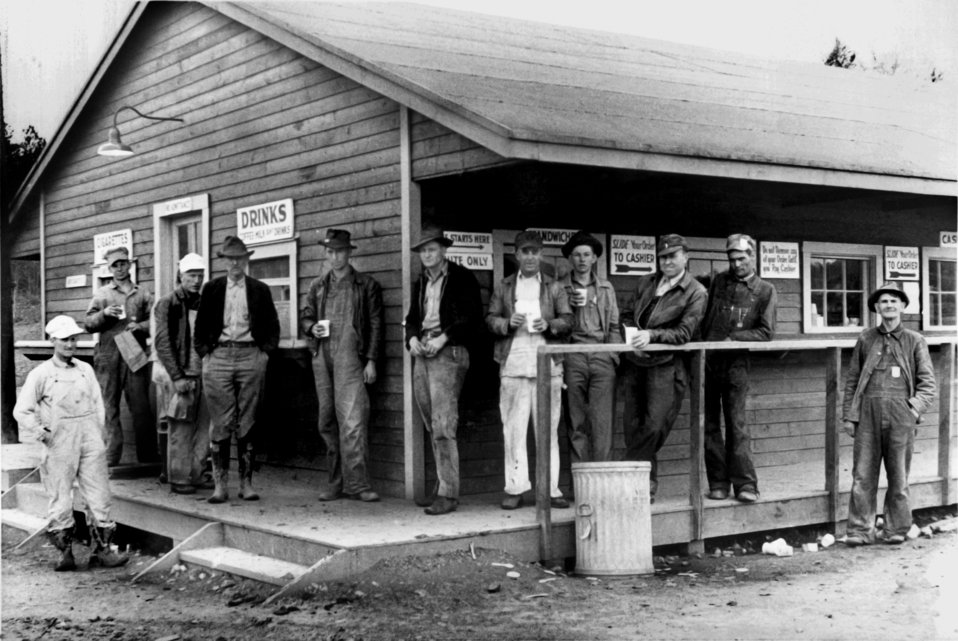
Workers on Break at Store Oak Ridge

roll 226 DOE photo Ed Westcott 4/19/44